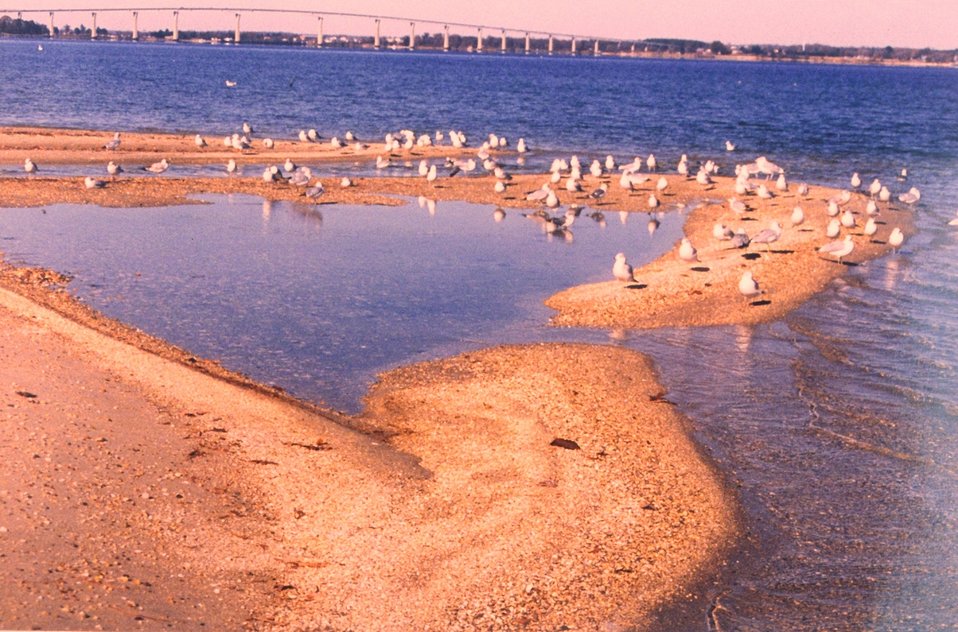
Sea gulls on a Patuxent River beach.